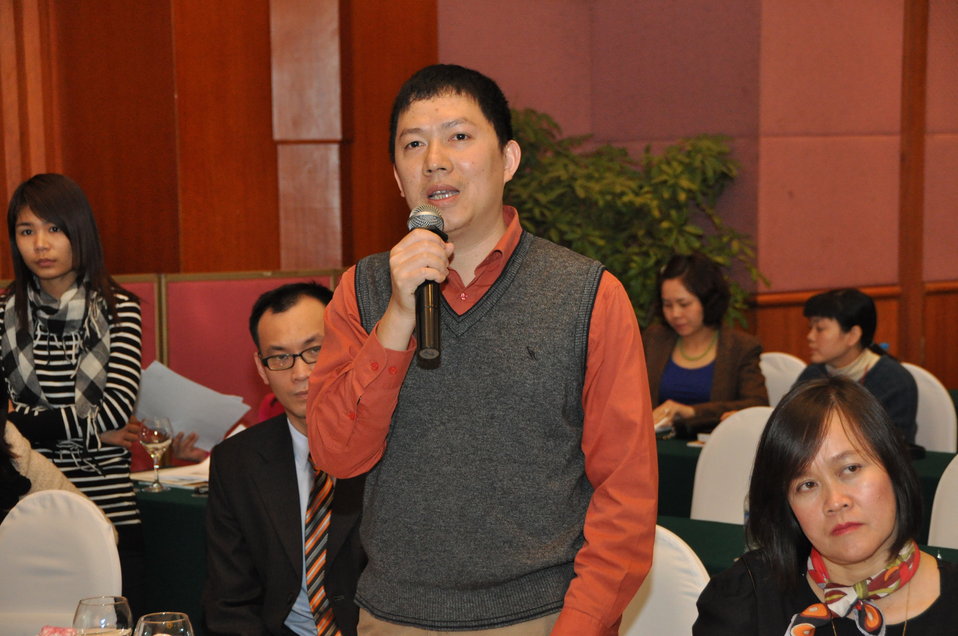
Provincial Competitiveness Index 2011 Launch